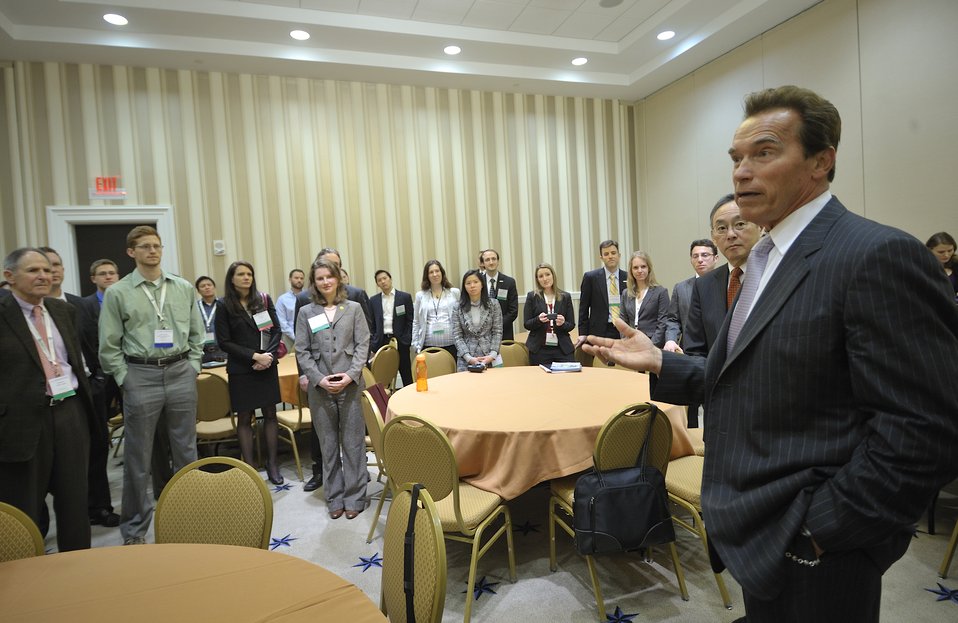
ARPA-E Energy Innovation Summit 2011, 7 of 83

Steven Chu, Secretary, United States Department of Energy and Arnold Schwarzenegger, Former Governor of California surprise graduate students who traveled to the summit.